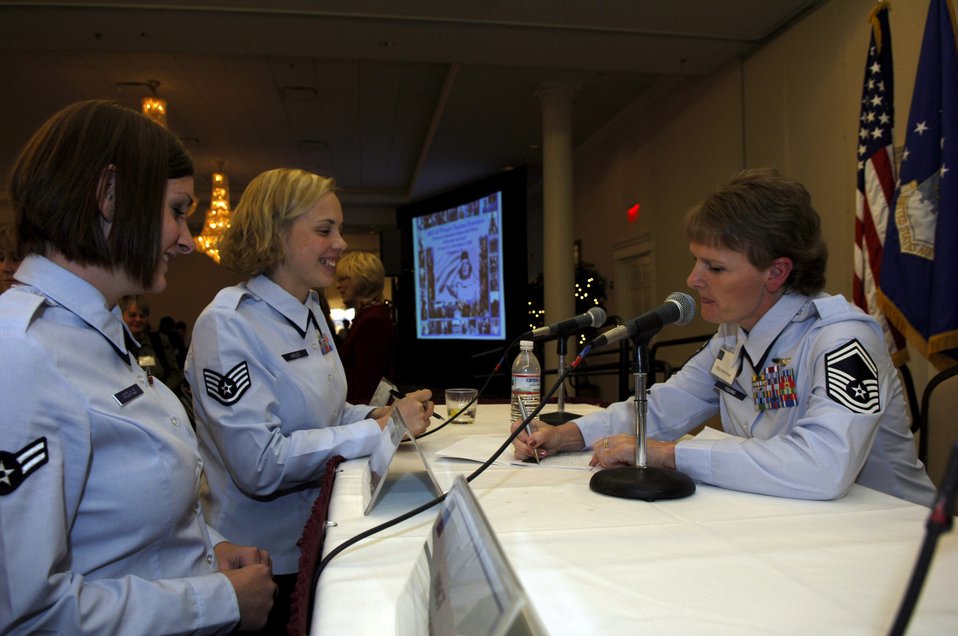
Captial Shield 2008

Senior Master Sgt. Joan Young, 1st Combat Camera Squadron, Charleston Air Force Base, S.C., gives her autograph to Staff Sgt. Lisa Krejci, 9th Comptroller Squadron, Beale AFB, Calif., at the 2007 Air Force Heritage to Horizon Women's Training Symposium in Springfield, Va., Oct. 31.